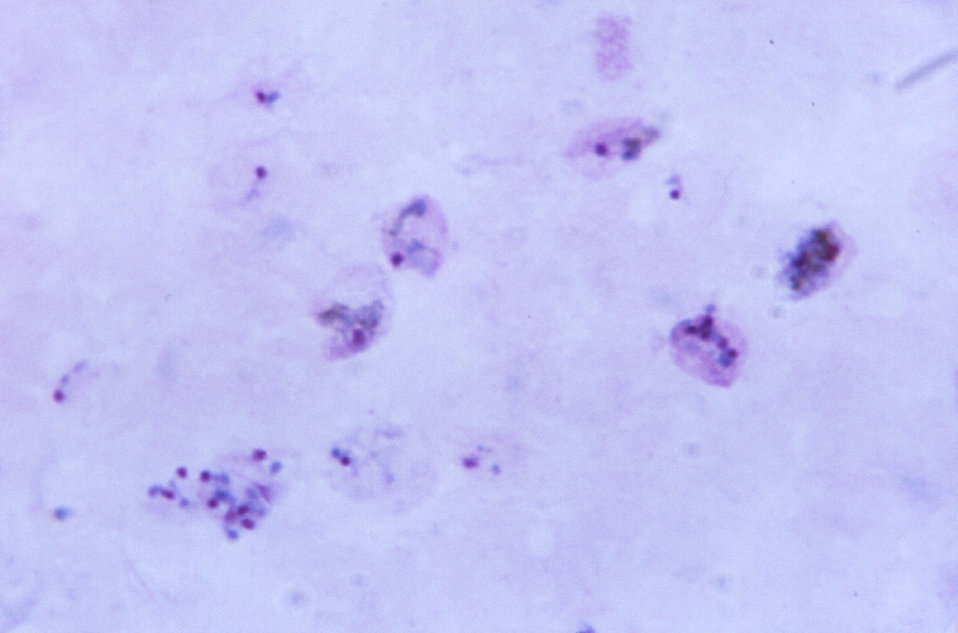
Magnified 1125X, this thick film photomicrograph revealed the presence of a number of immature Plasmodium vivax schizonts.